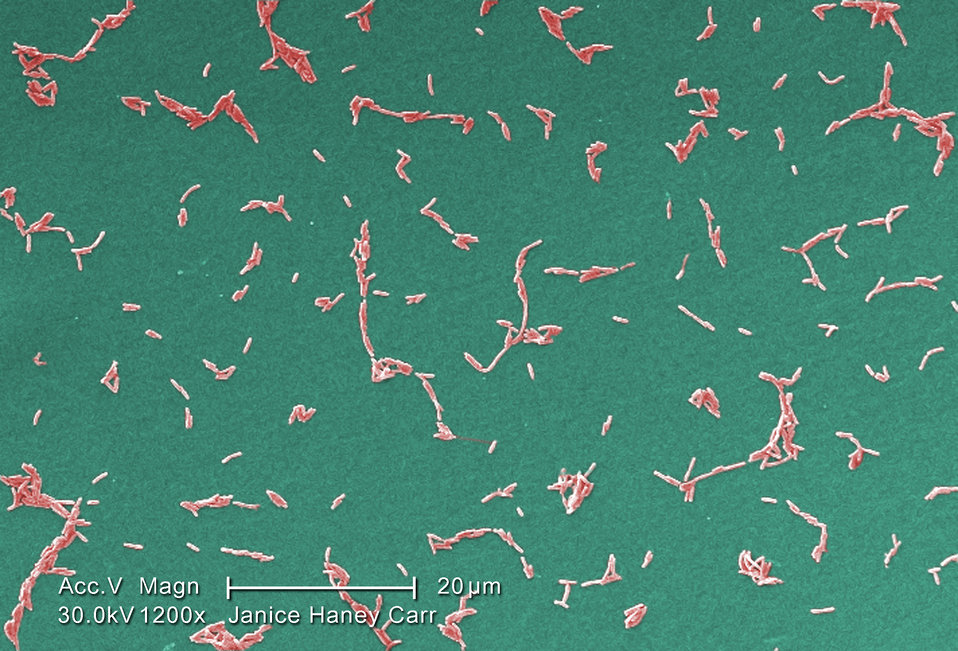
Under a moderate magnification of 1200X, this colorized scanning electron micrograph (SEM) depicted a diffuse group of Gram-negative Legionella pneumophila bacteria. Please see PHIL 11092 through 11152 for additional SEMs of these organisms, specifically PHIL 11101 for a black and white version of this image.